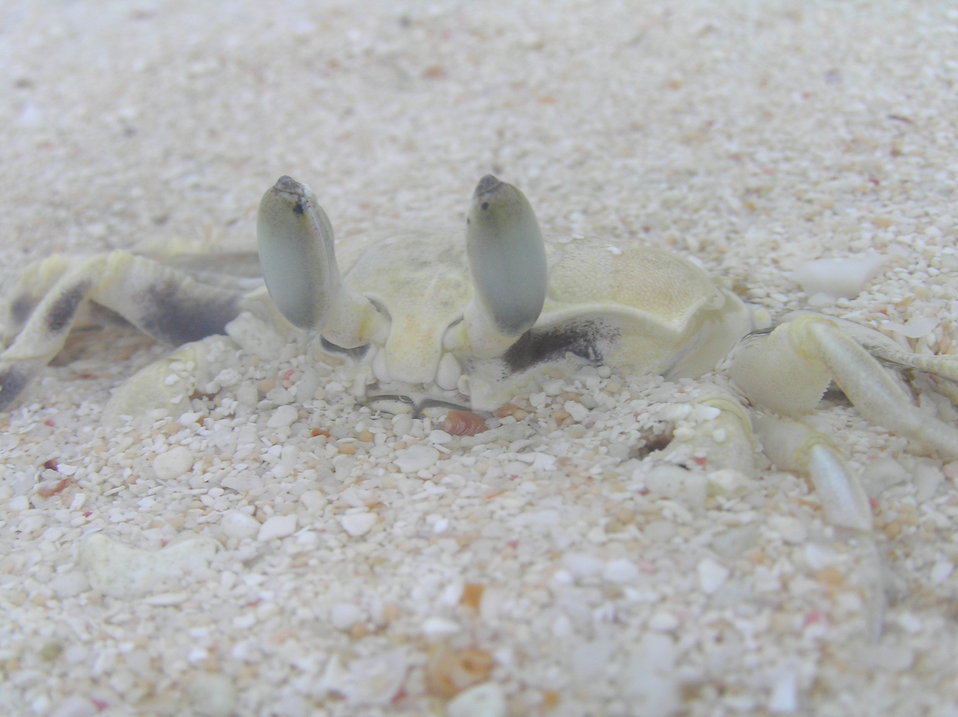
Camp Shutterbug 2011 prize winner

Guam National Wildlife Refuge, Pacific Islands
Photo: Tupene Baba Jr., age 10
Second place, Plants and Animals
The Hagu' hi or ghost crab (Ocypode quadrata) conceals itself by day by burrowing into the white sand of island beaches.